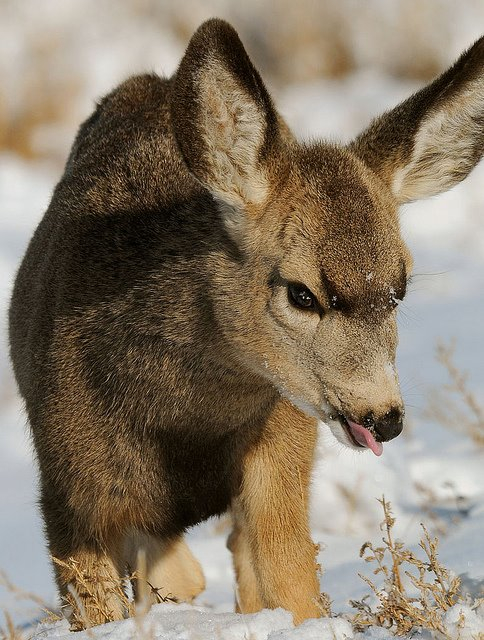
young fawn in snow

A mule deer fawn catches a snowdrop at CO's Rocky Mountain Arsenal National Wildlife Refuge near Denver.